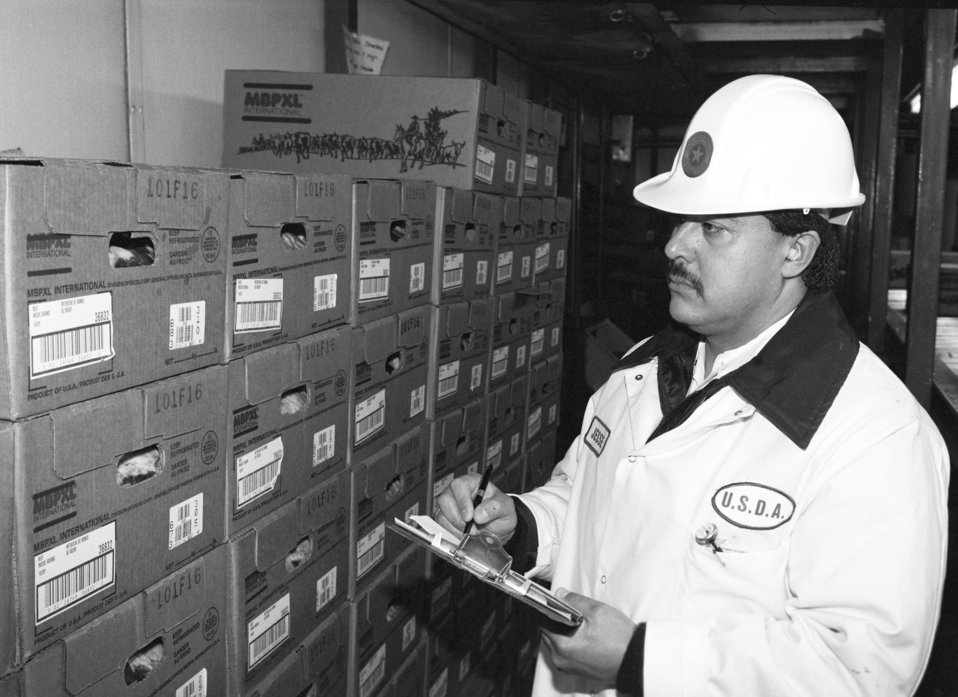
U.S. Department of Agriculture (USDA) Food Safety Inspection Service (FSIS) inspectors inspect beef using a Streamline Inspection System (SIS) at a processing plant in Plainview, TX on January 22, 1991.